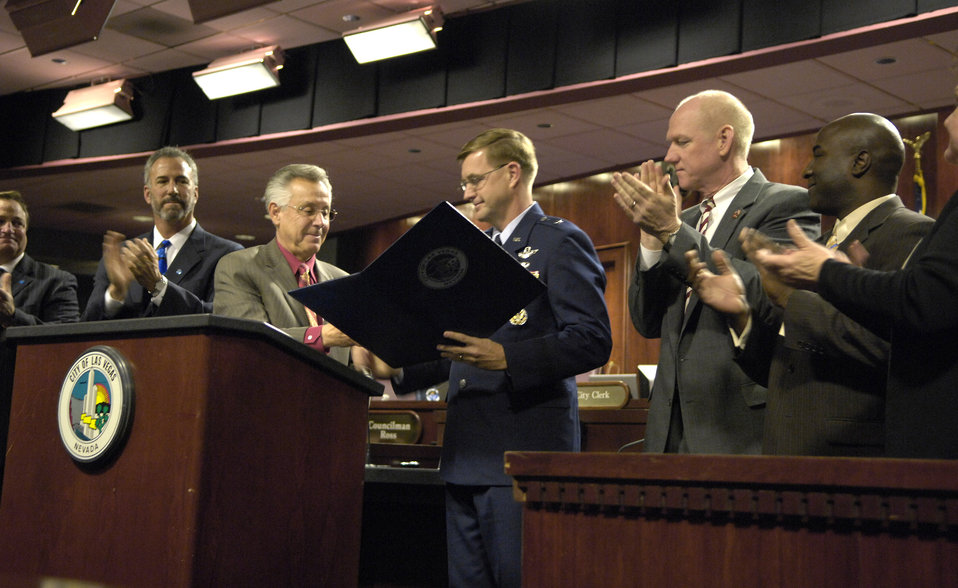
Aviation pioneers attend Heritage to Horizons ceremony

Las Vegas Councilman Gary Reese hands Brig. Gen. Stephen L. Hoog a certificate proclaiming Nov. 5 through 11 as Air Force Week Nov. 8 in Las Vegas. Air Force officials hosted several events to commemorate the occasion culminating in the Nellis Aviation Nation Air Show Nov. 10 and 11. General Hoog is the 57th Wing commander at Nellis Air Force Base, Nev.